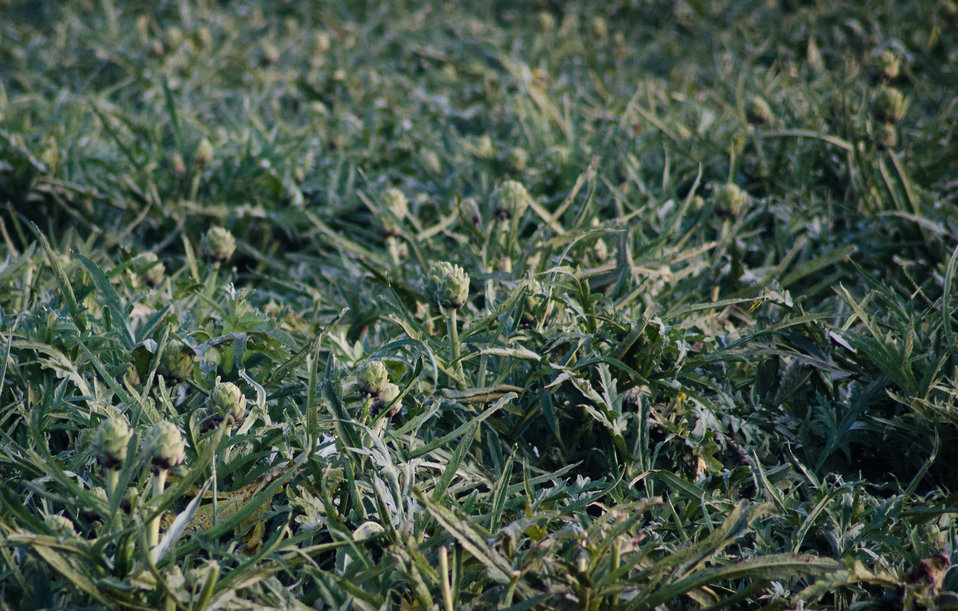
Artichoke farm in Castroville, CA, on Thursday, June 16, 2011.